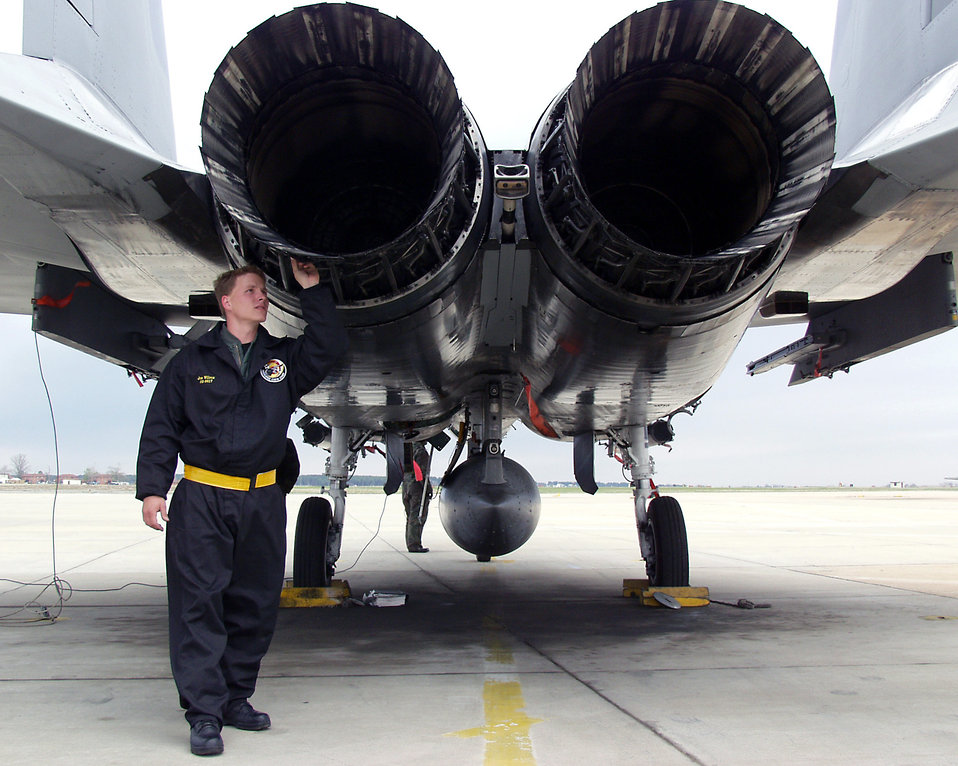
Wilcox

LANGLEY AIR FORCE BASE, Va. -- Senior Airman Jon Wilcox, a 27th Aircraft Maintenance Unit dedicated crew chief here, inspects the engine augment on his F-15 Eagle. Dedicated Crew Chiefs are chosen by rank based on experience and exceptional performance.